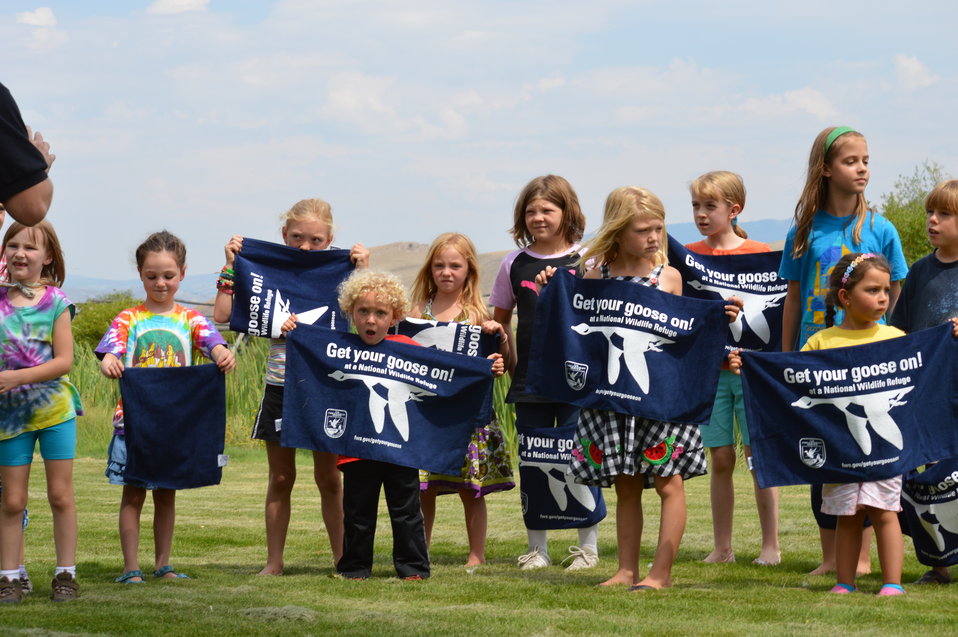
Get Your Goose On! - National Elk Refuge Style

On August 10, 2012 the U.S. Fish and Wildlife Service and Partners celebrated the 100 year anniversary of the establishment of the National Elk Refuge. In these photos, young attendees, along with Puddles the Blue Goose and the National Elk Refuge's mascot, showed us how to Get Your Goose On! with style.